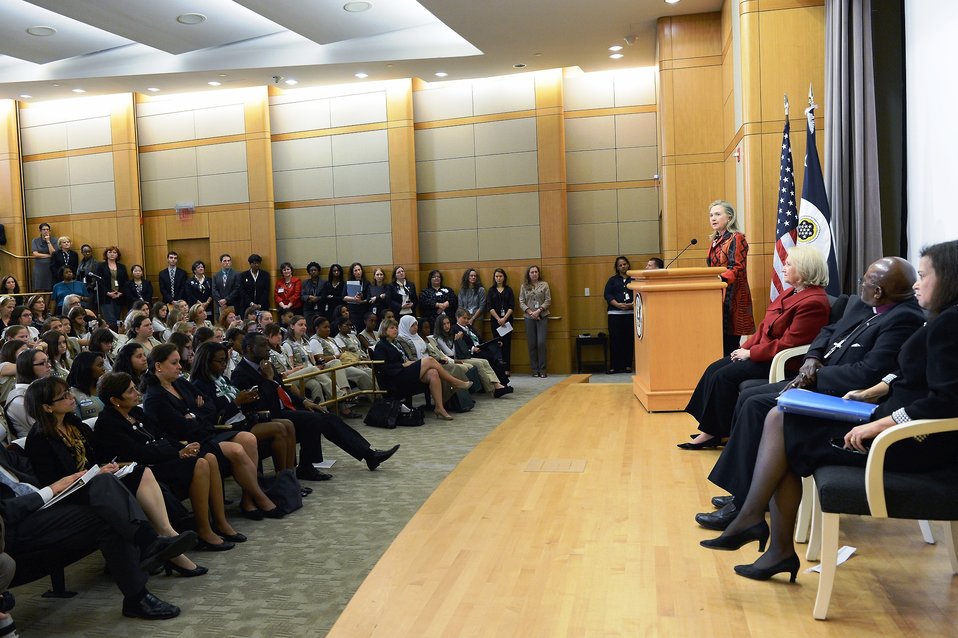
Secretary Clinton Addresses Girl Scouts in Honor of the International Day of the Girl

U.S. Secretary of State Hillary Rodham Clinton and Archbishop Desmond Tutu deliver remarks to a group of visiting Girl Scouts in honor of the first-ever International Day of the Girl on October 11 at the U.S. Department of State in Washington, D.C., October 10, 2012.